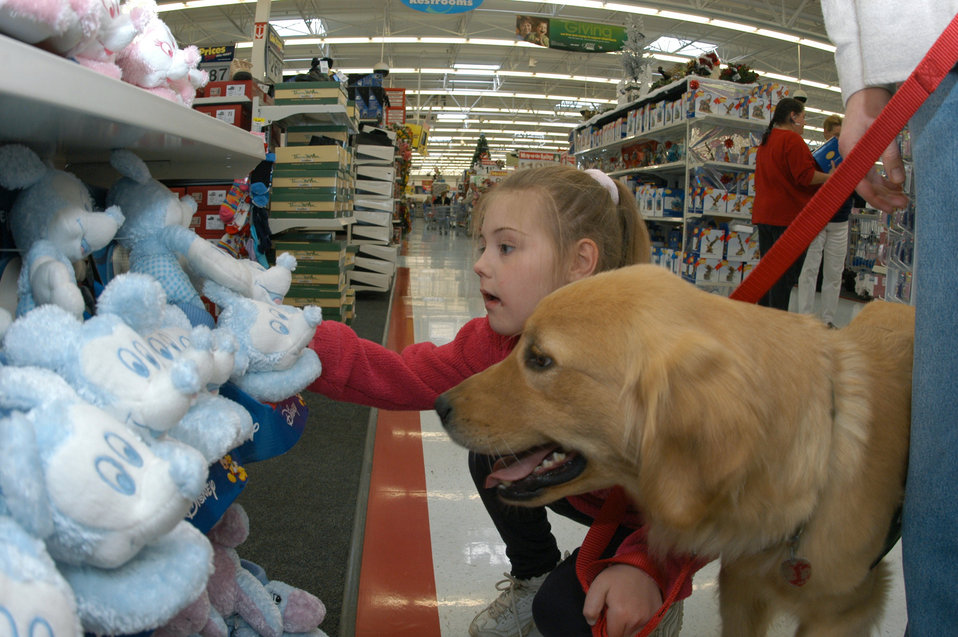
Two friends

COLORADO SPRINGS, Colo. -- Jamie Rizzo and Berkley, a Canine Assistants service dog, shop at a local department store. Canine Assistants trains golden retrievers and Labrador retrievers to assist people with physical and mental disabilities. Her father is 1st Lt. Victor Rizzo of the 3rd Space Operations Squadron at nearby Schriever Air Force Base.